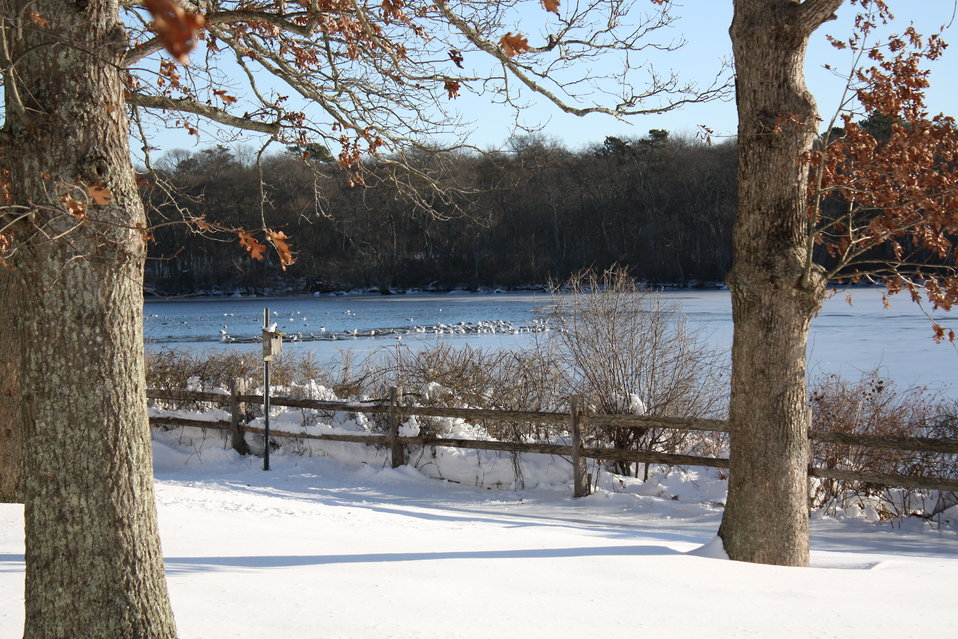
Photo of the Week - Winter at Wertheim National Wildlife Refuge (NY)

Photo of the week - 3/3/2010

Winter at Wertheim National Wildlife Refuge in New York. Wertheim Refuge is part of the Long Island National Wildlife Refuge Complex.